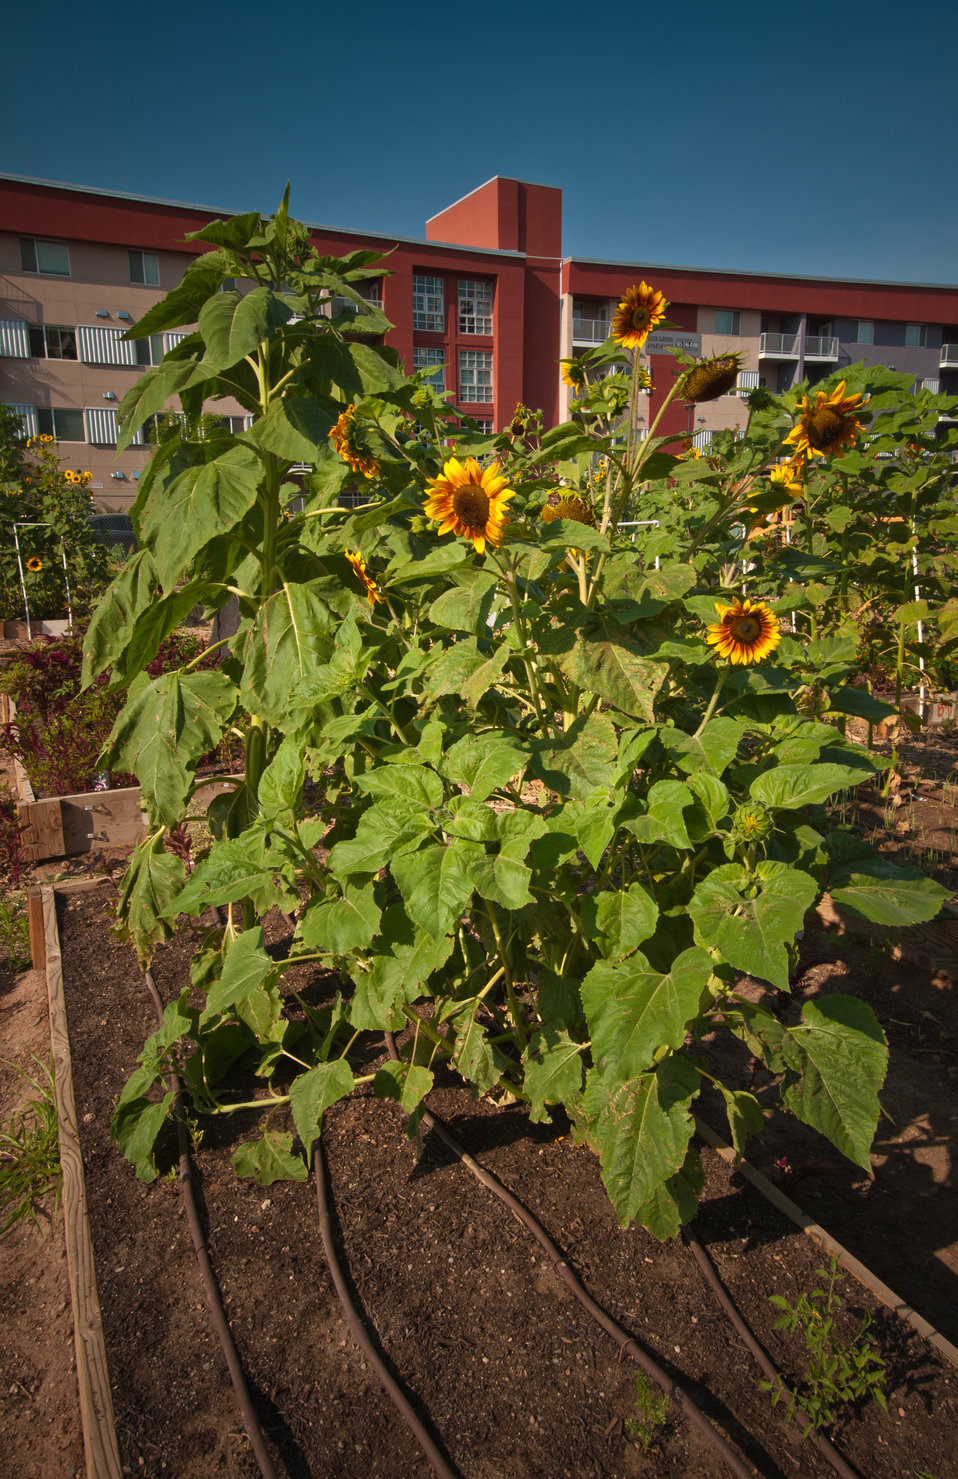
The La Montanita Co-op Veteran Farm Project (VFP) funded through the U.S. Department of Agriculture's (USDA) Agricultural Marketing Service (AMS) Specialty Crop Grant program provides veterans workshops on sustainable farming practices, hands-on gardening and farming experience. This collaboration between La Montanita Co-op, Downtown Action Team, the Veteran’s Administration, the New Mexico Department of Agriculture and Holistic Management International provides the initial training for veterans to start or work at sustainable agriculture businesses. VFP grows produce at their Alvarado Urban Farm in Albuquerque, NM year round. The VFP gardens will supply a stand at the Veteran Affairs (VA) Farmers’ Market once a week over the summer, feed project participants and fill Community Supported Agriculture (CSA) boxes for low-income families in Albuquerque, New Mexico.